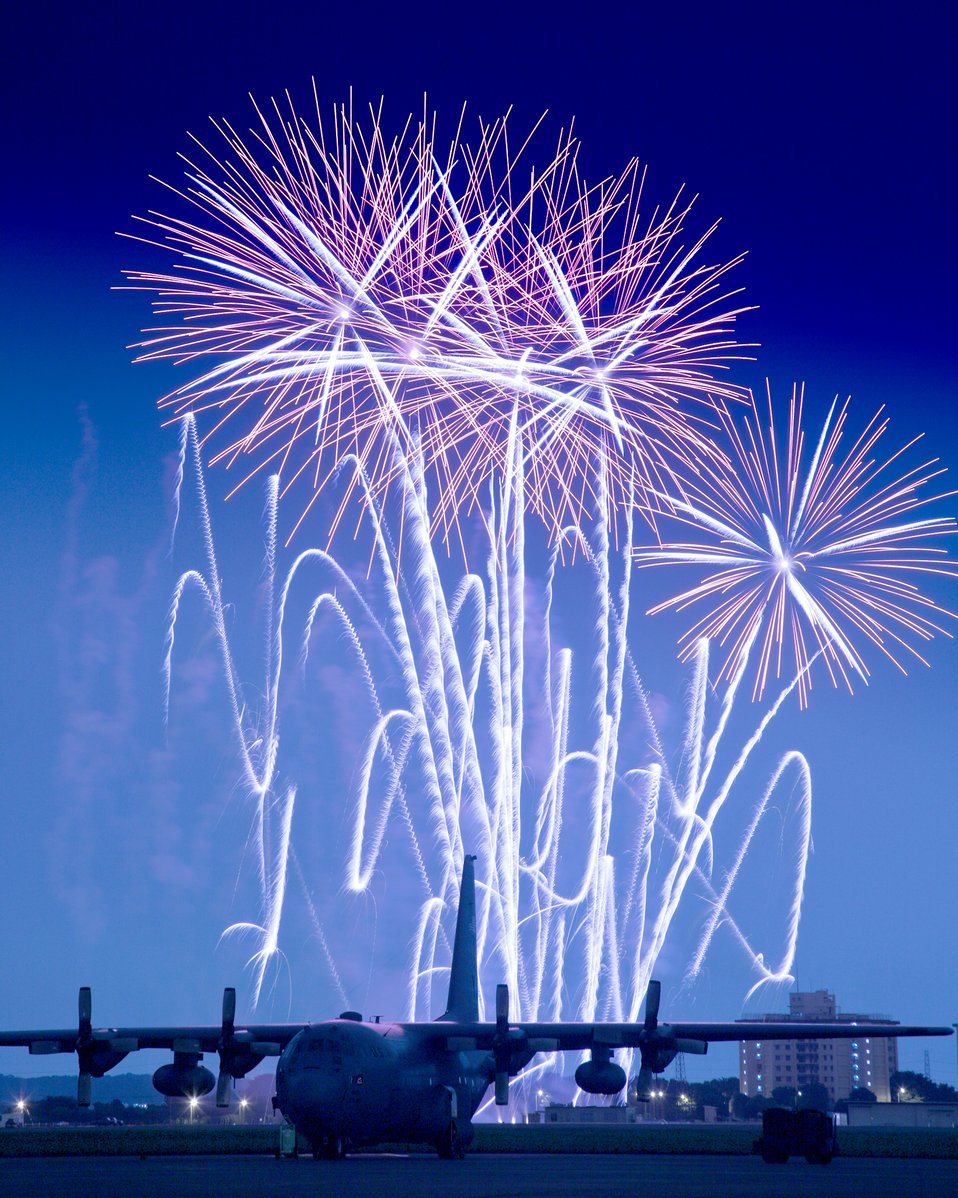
Fireworks Celebration

Fireworks burst over Yokota Air Base, Japan, July 3, 2010. Airmen from the 374th Force Support Squadron started the day with the Firecracker 5K run and continued with a wide variety of activities throughout the day including go-carts, a petting zoo, live entertainment, food and fireworks.